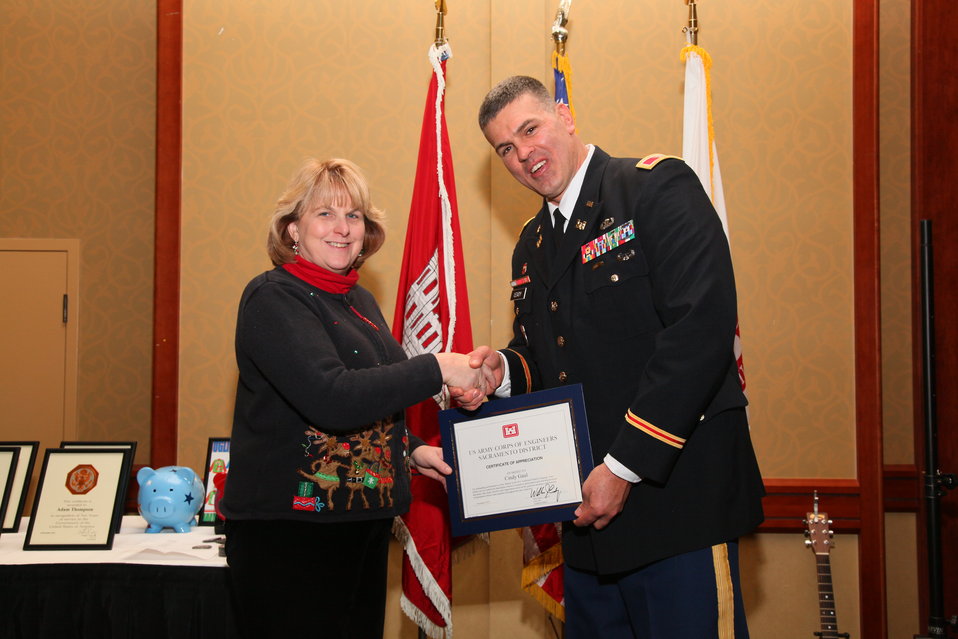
Sacramento District Holiday Party 2011